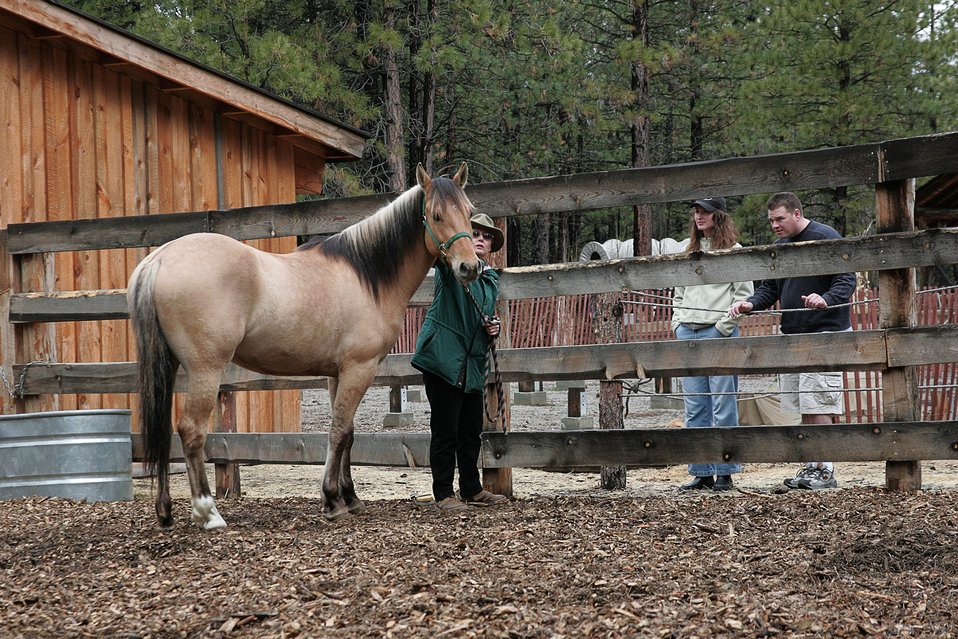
A High Desert Museum volunteer showes off Spirit, a Kiger wild horse to museum visitors.